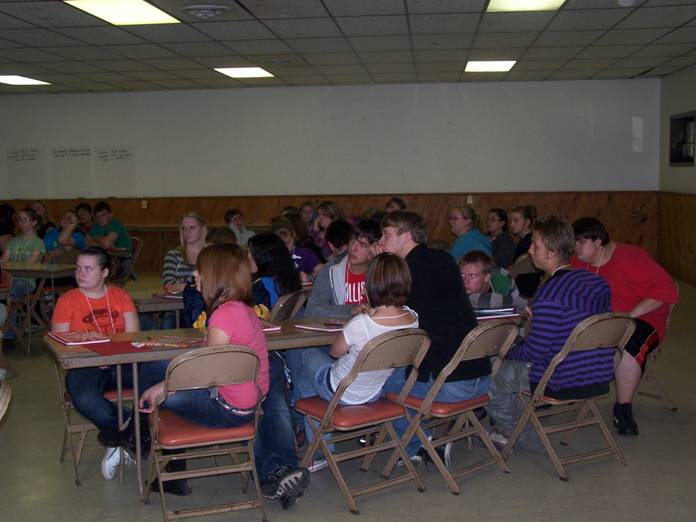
LAUNCH inc. Event in Jackson, OH

Dr. Natasha Slesnick, NIDA Grantee during NDFW and the event hosted by LAUNCH inc. in Jackson, OH